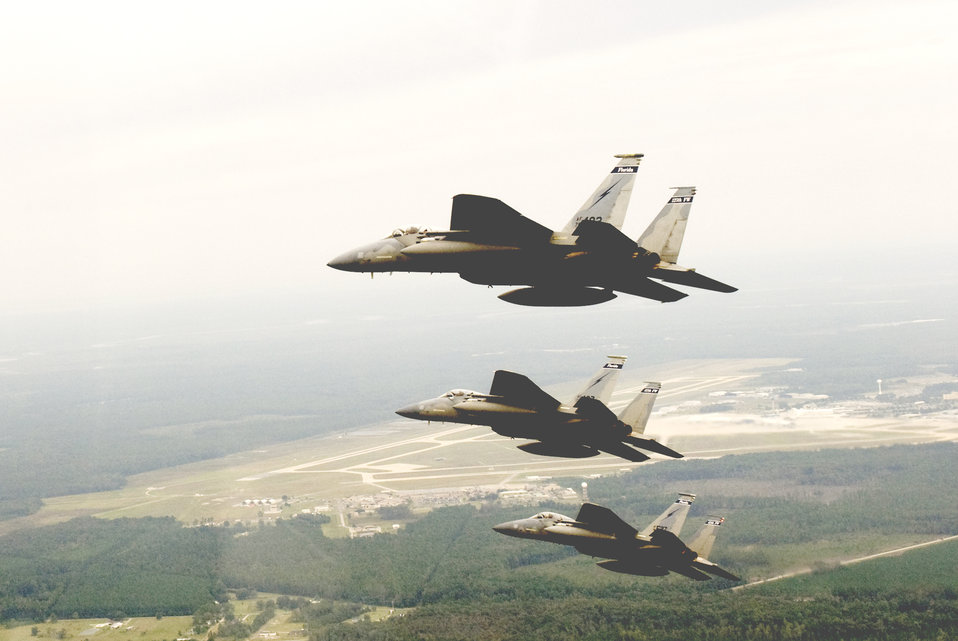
Three-ship precision

F-15 Eagles from the 125th Fighter Wing prepare to land after performing a flyover for the Jacksonville Jaguars football game Oct. 4, 2009, against the Tennessee Titans in Jacksonville, Fla.